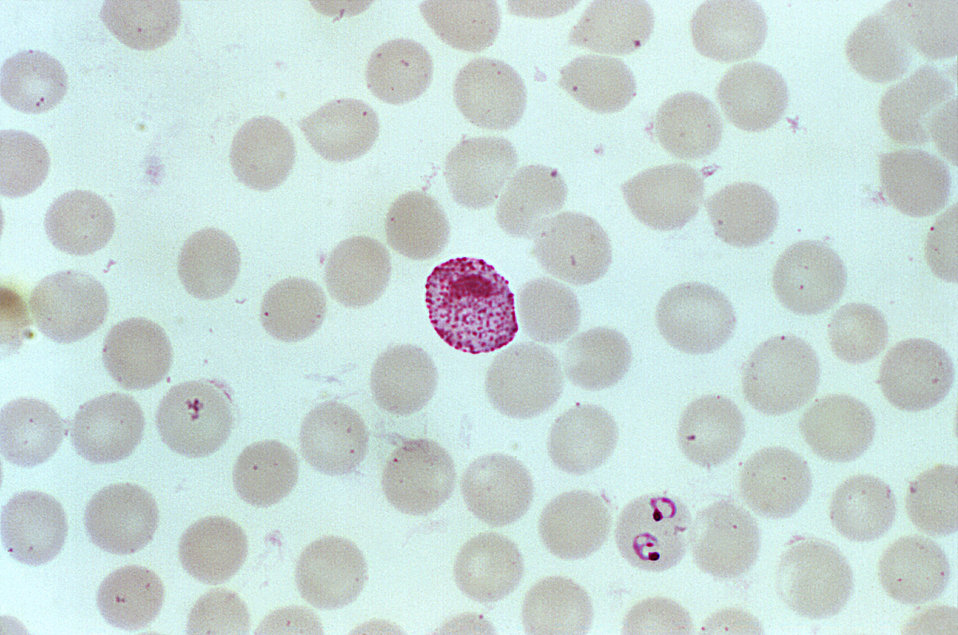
This photomicrograph of a blood smear contains a microgametocyte of the parasite Plasmodium vivax .